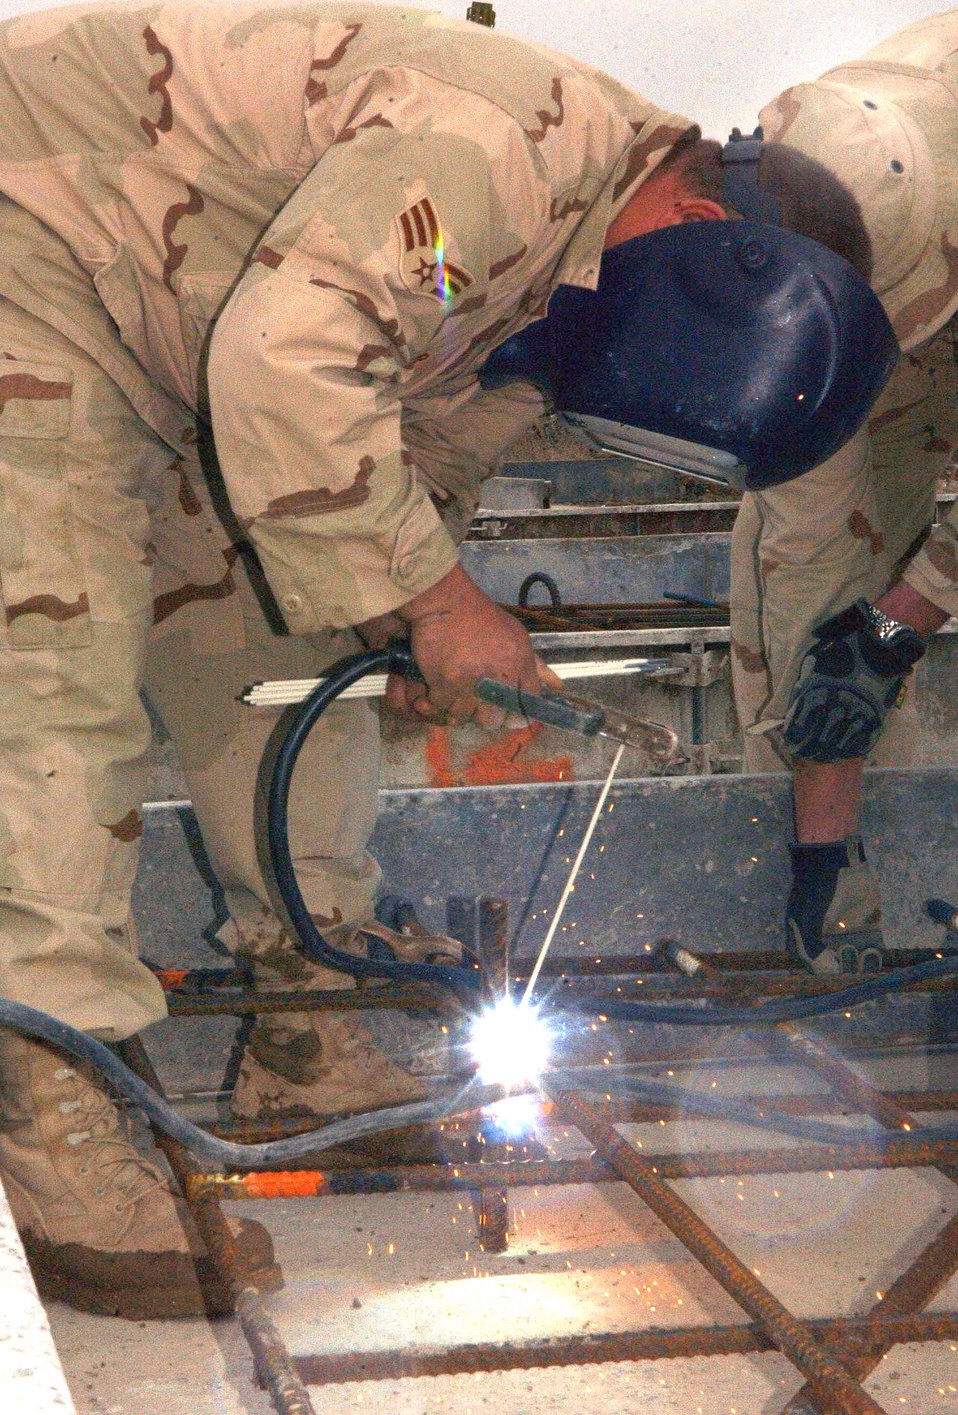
Civil engineers prepare to 'close the gaps' on Bagram's flightline

BAGRAM AIR BASE, Afghanistan -- Senior Airman Chris Bender welds the forms for runway replacement slabs. Twenty-eight deteriorating runway slabs are scheduled to be replaced over 16 weeks here. He is assigned to the 455th Expeditionary Civil Engineer Squadron.